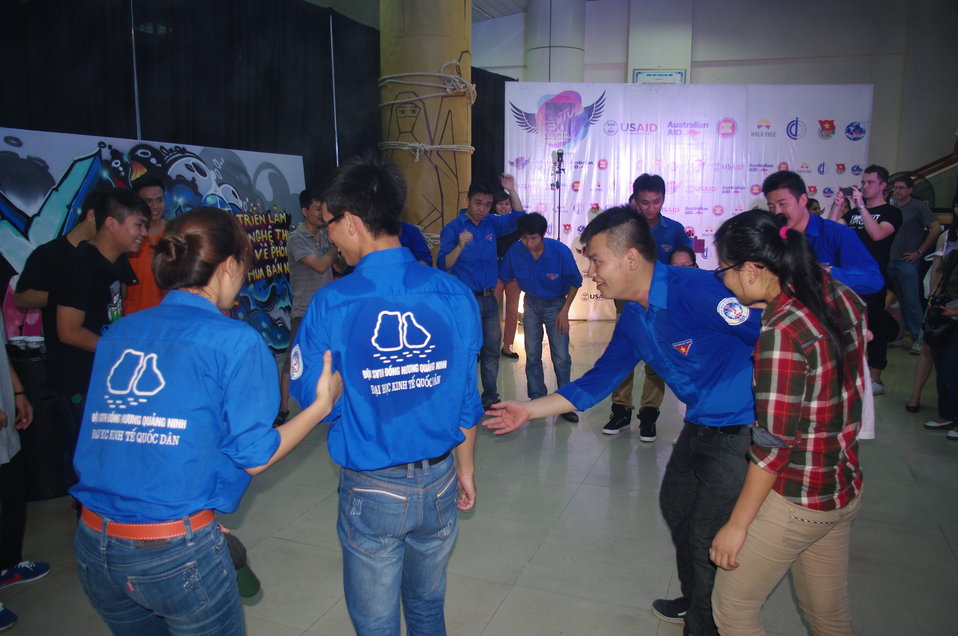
MTV EXIT opens Youth Forum in Hanoi